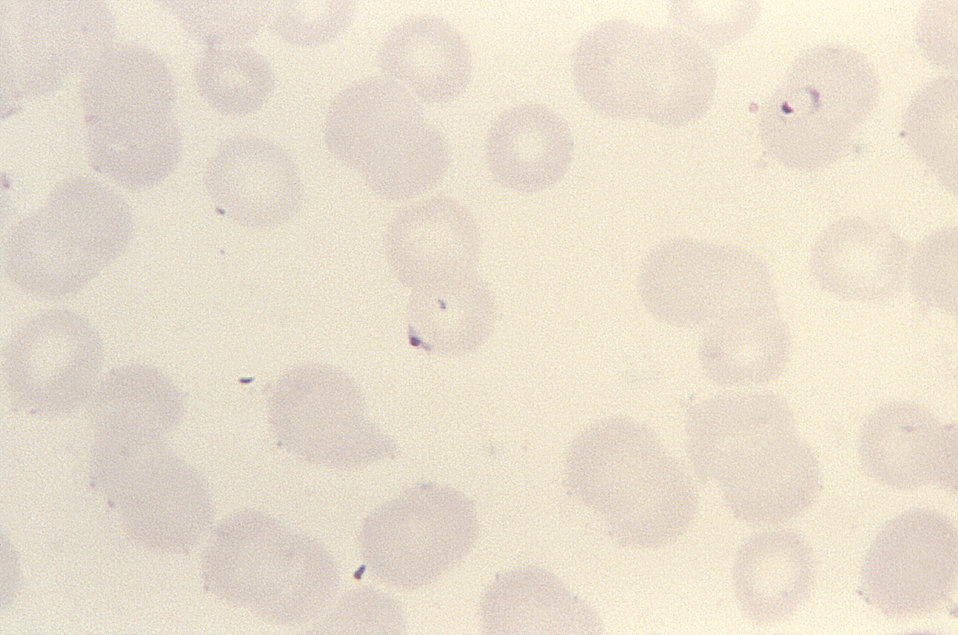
This thin film blood smear reveals two ring form Plasmodium falciparum parasites using Giemsa stain; Mag. 1125X.